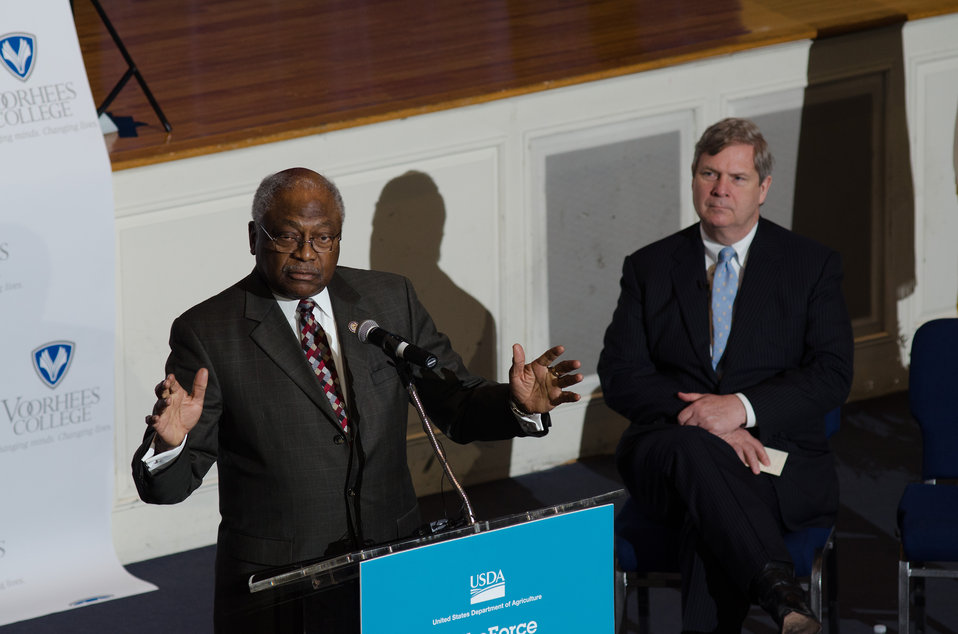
U.S. Congressman Jim Clyburn (SC) introduces Agriculture Secretary Tom Vilsack during the U.S. Department of Agriculture's (USDA) Strike Force for Rural Growth and Opportunity event held at Voorhees College in Denmark, SC, on Tuesday, March 26, 2013.